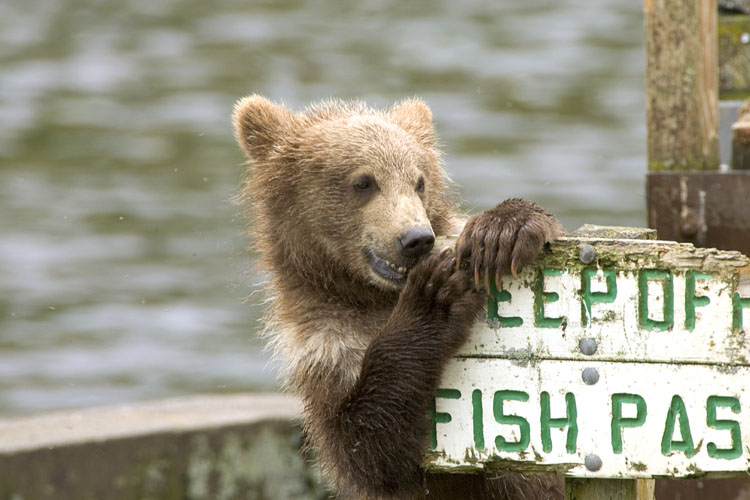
Kodiak Brown Bear

Kodiak National Wildlife Refuge- Wildlife